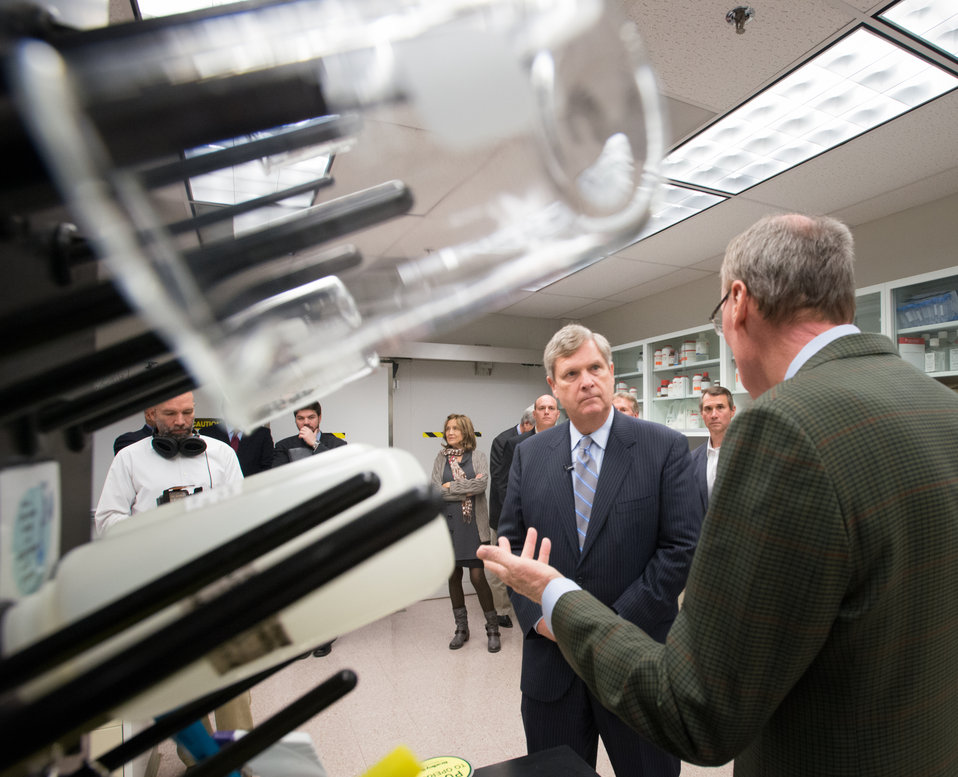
U.S. Department of Agriculture (USDA) Secretary Tom Vilsack listens to Agriculture Research Service (ARS), National Center for Genetic Resources Preservation (NCGRP), National Animal Germplasm Program (NAGP), Program Leader Dr. Harvey Blackburn talks about the original need and history of the NAGS embryo and sperm freezing and reconstitution technology; the productive cooperation and collaboration with industry, other agencies and international partners; and how the data from their work becomes part of (animal genetic resource information network (AnimalGRIN) an ever-growing source of information, during his visit in Ft. Collins, CO, on Wednesday, Nov. 6, 2013.